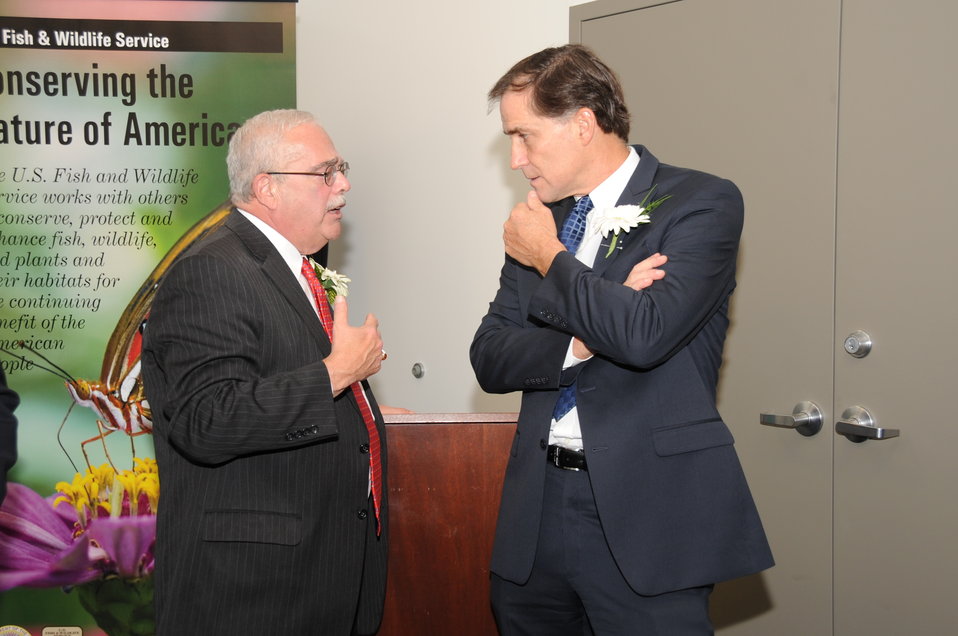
Together in Conservation

Memorandum of Understanding Signing Ceremony with U.S. Fish and Wildlife Service, Smithsonian Institution, and George Mason University. October 26, 2012